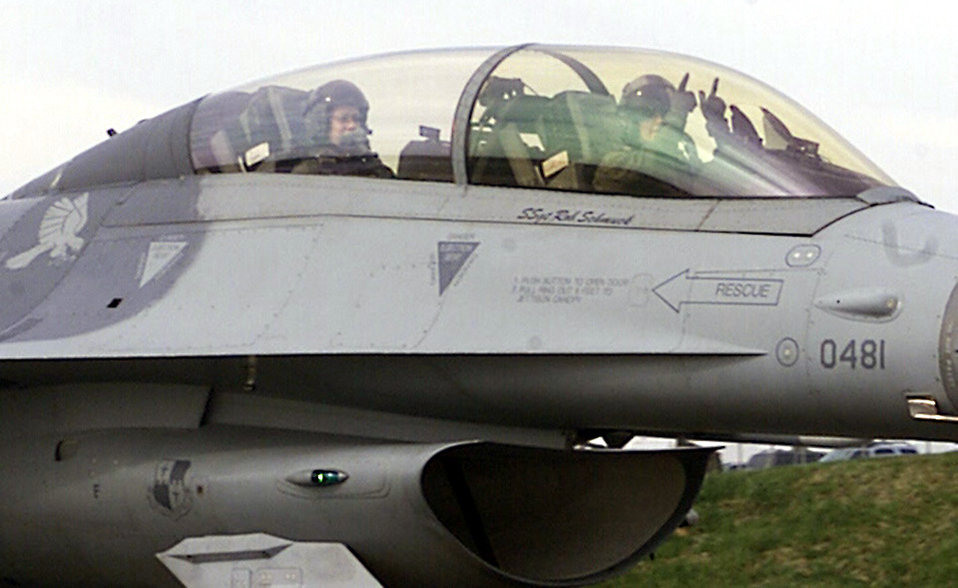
Big guns

SPANGDAHLEM AIR BASE, Germany -- Capt. Jessica Rhyne, 23rd Fighter Squadron pilot, makes the “big guns” gesture as she and 1st Lt. Corinne Gilliam, 23rd FS Intelligence Flight officer, prepare for flight April 1. The captain and 1st Lt. Gilliam were part of a three-“man” flying training mission, which included Spangdahlem Air Base’s only other female F-16 pilot, 1st Lt. Leigh Noel, 22nd Fighter Squadron.